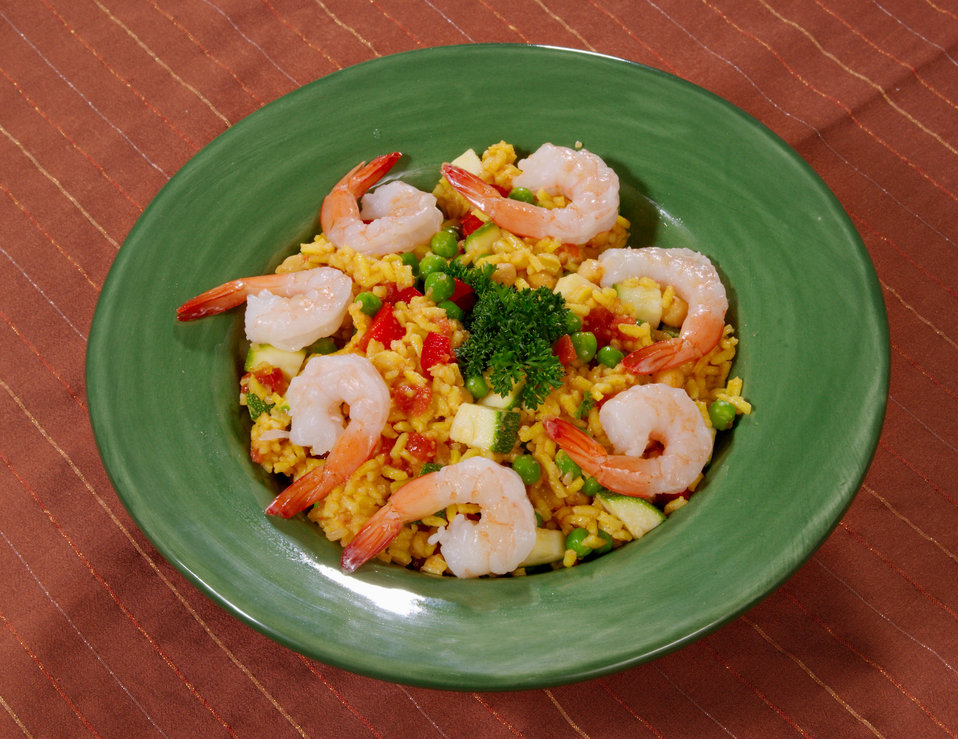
Entitled Spanish Paella, this dish is as delicious, as it is healthy. Including shrimp, rice, chickpeas, green peas, red bell pepper, olive oil, garlic, zucchini, low-sodium chicken broth, saffron, pepper, salt, and tomatoes. The recipe may be viewed by way of the link below.